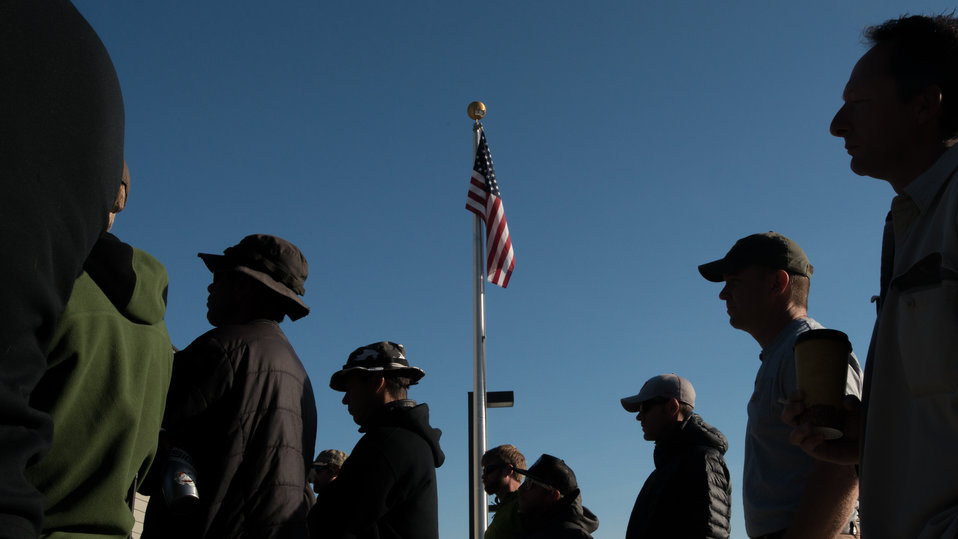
Veteran wildland firefighter rappellers pay attention to the morning meeting, during the U.S. Department of Agriculture (USDA) U.S. Forest Service (USFS) National Helicopter Rappel Program’s Rappel Academy at Salmon Air Base in Salmon, ID on Wednesday, May 14, 2014. From May 12, 2014, 72 veteran rappellers from all over the nation, 30 support staff, and three helicopters with flight crews attend the training at Salmon Air Base. Participants will rappel into the Perreau Creek area. The annual training is delivered in accordance with the National Rappel Operations Guide; strengthen leadership, teamwork, and communications within the rappel community, and produces quality aerial delivered firefighters for use in fire and aviation operations. The USDA Forest Service National Helicopter Rappel Program’s primary mission is initial attack. Rappel crews may be utilized for large fire support, all hazard incident operations, and resource management objectives.